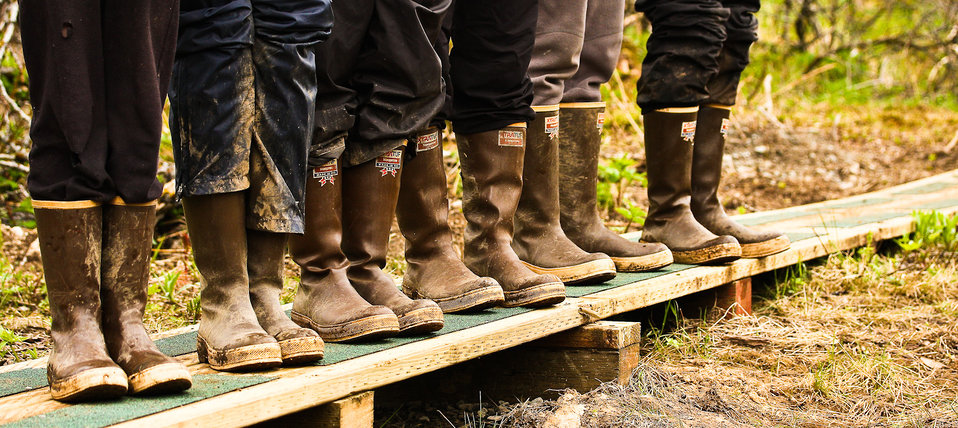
Volunteers are tuff

Volunteering can be muddy work at Kodiak!
Lisa Hupp/USFWS